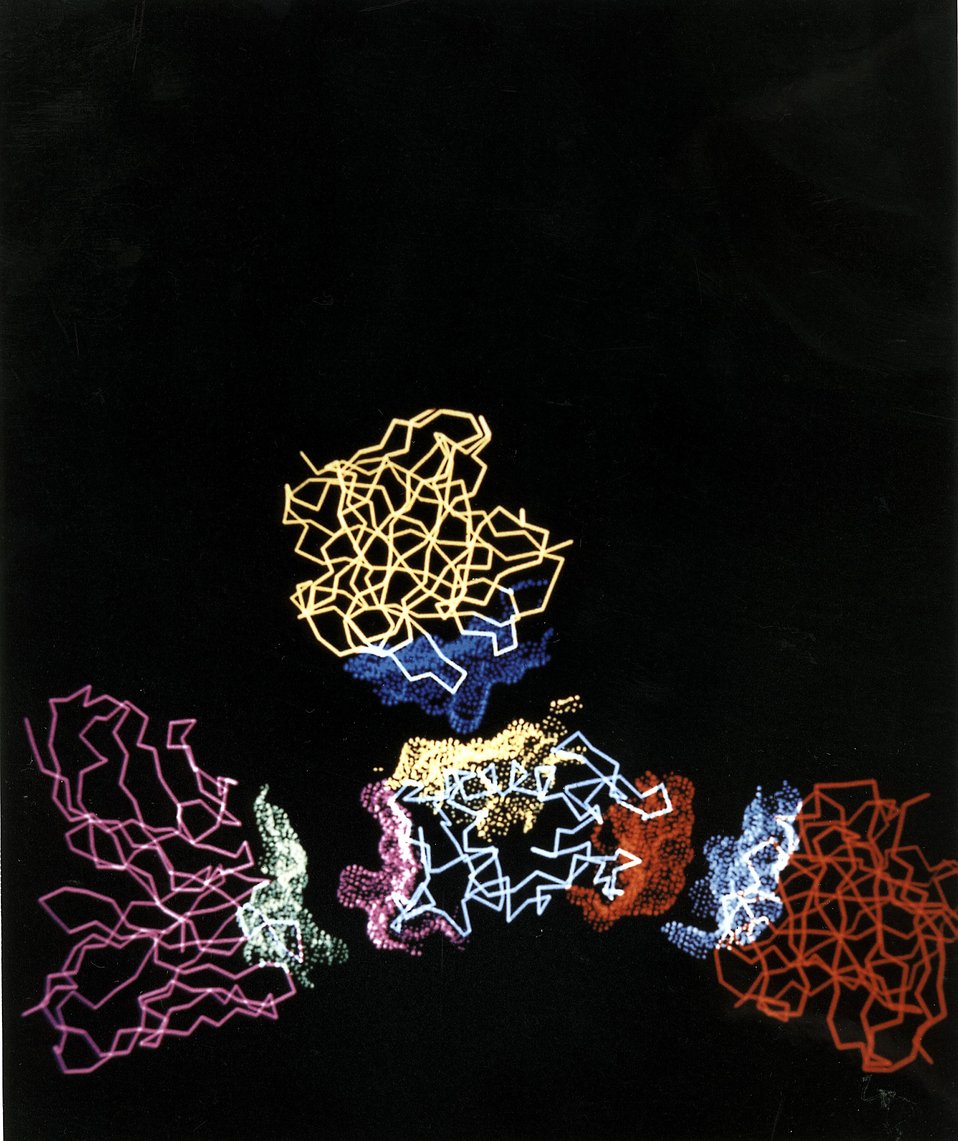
Details of the Body's Defense. Antibodies serve at the front line of the body's defense system. The antigen here is lysozyme, an enzyme found in egg whites. Shown are a single lysozyme molecule (blue) and portions of three different antibodies from mouse (red, yellow, and violet).